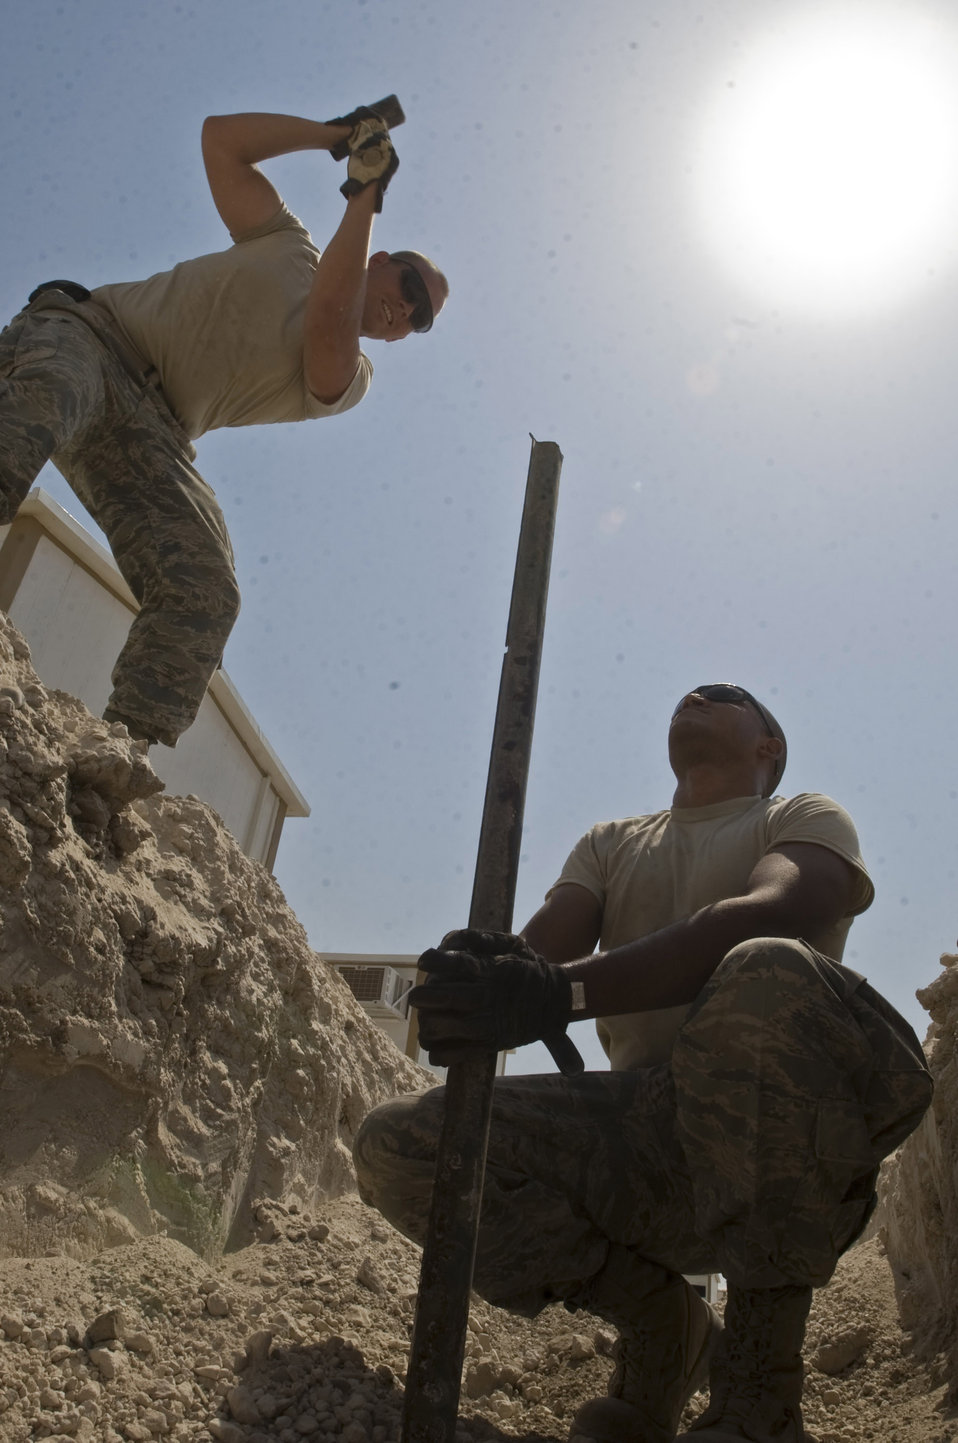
Breaking ground

Staff Sgt. Trevor Petersma and Airman 1st Class Aaron Weathers measure the distance between metal supports for water and sewage lines Aug. 15 at Ali Base, Iraq. In the transition from base tents to trailers, the 407th Expeditionary Civil Engineer Squadron is rerouting the power supply along with laying water and sewage systems. Sergeant Petersma is deployed from Malmstrom Air Force Base, Mont., and Airman Weathers is deployed from F.E. Warren AFB, Wyo.